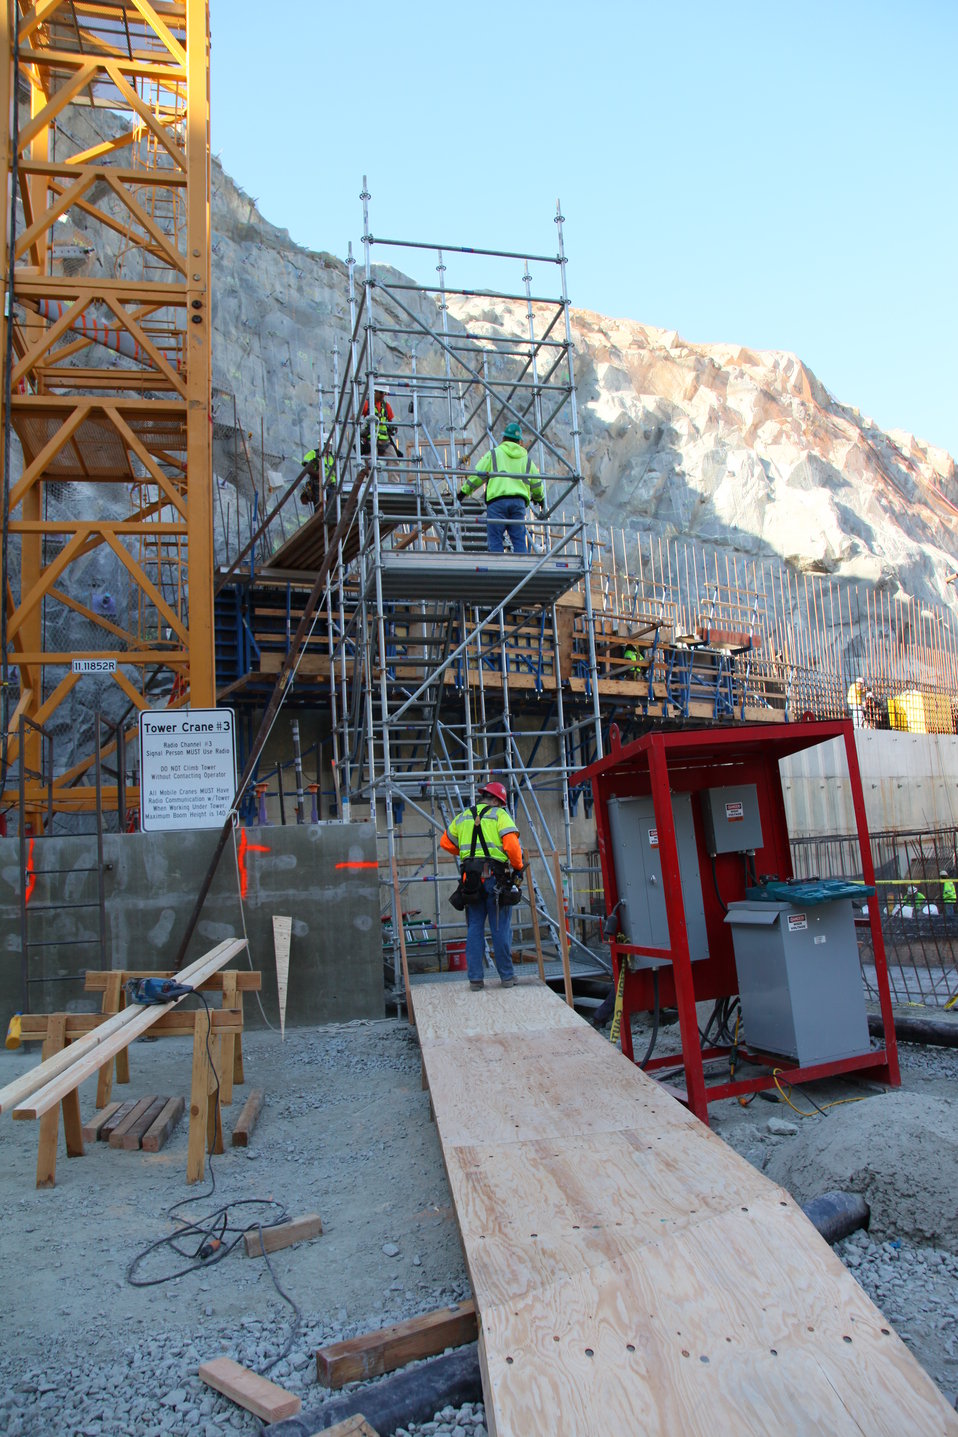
Safety a priority at Folsom Dam project

Contractors for the U.S. Army Corps of Engineers Sacramento District safely navigate the construction zone at the auxiliary spillway using walkways and scaffolding at the Folsom Dam in Folsom, Calif., Sept. 19, 2012. Safety at the job site is a number one priority; equipment and personal safety are a requirement. The Sacramento District is building the spillway in cooperation with the U.S. Bureau of Reclamation, the Central Valley Flood Protection Board, and the Sacramento Area Flood Control Agency to improve the safety of the existing dam and reduce flood risk for the greater Sacramento area.